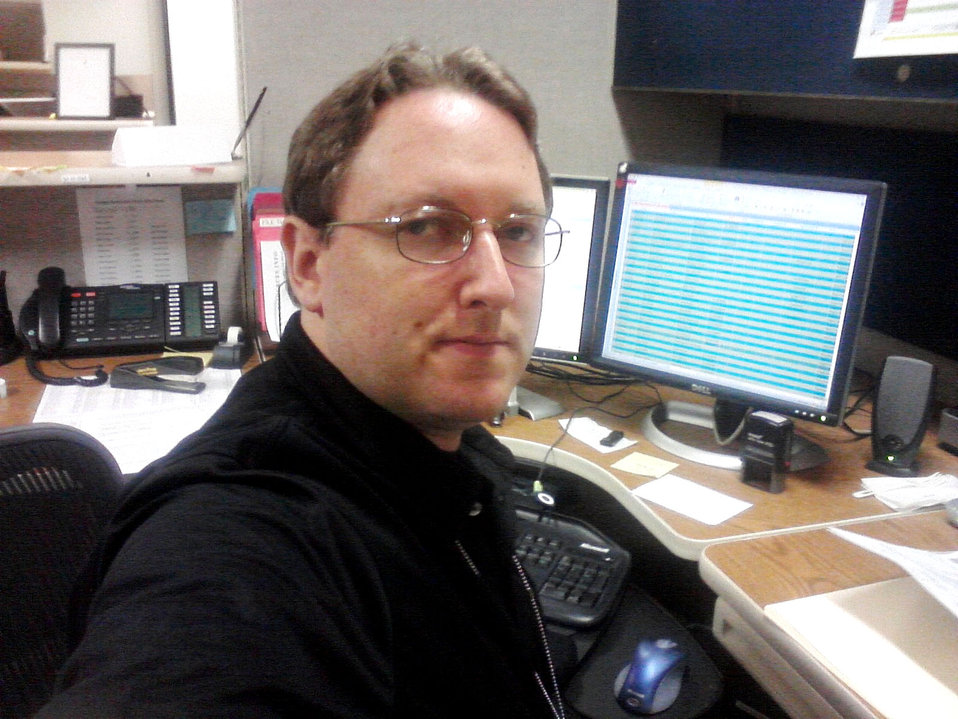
Derek Neuts, an Administrative Assistant with Fishery Resources in Region 1, served with the U.S. Air Force Security Forces Group from 2001 to 2005. He was hired directly out of rehabilitation to work with the Service.